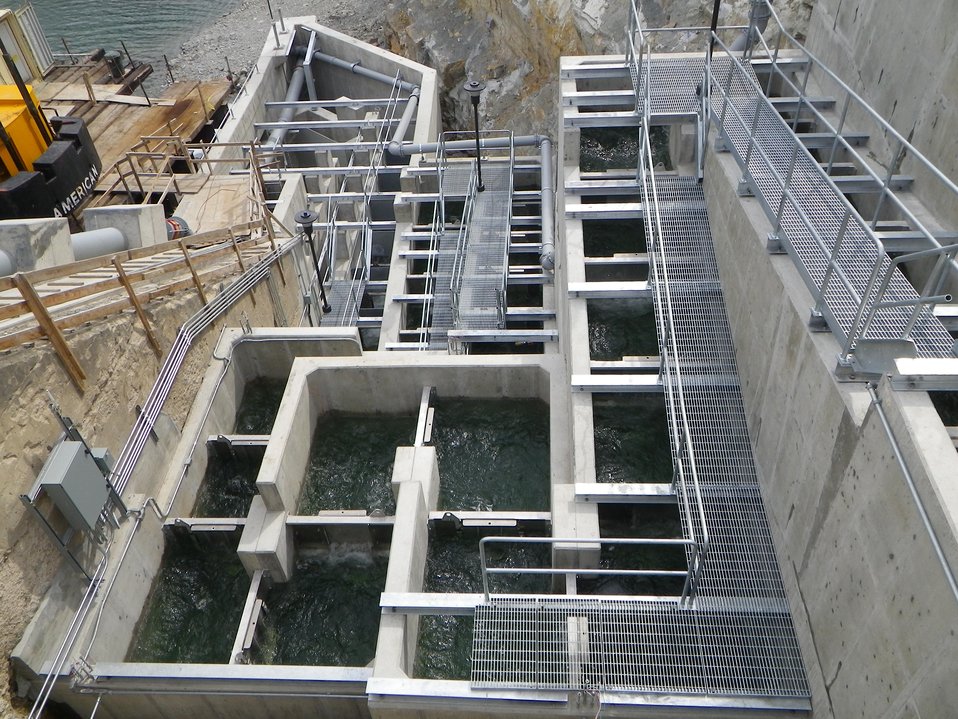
Thompson Falls Fish Ladder

Thompson Falls Fishway is the Nation’s 1st full-height fishway designed specifically to accommodate the passage of bull trout. Built by PPL Montana, fish blocked downstream of Thompson Falls Dam will be able to gradually ascend the tallest fish ladder in Montana.